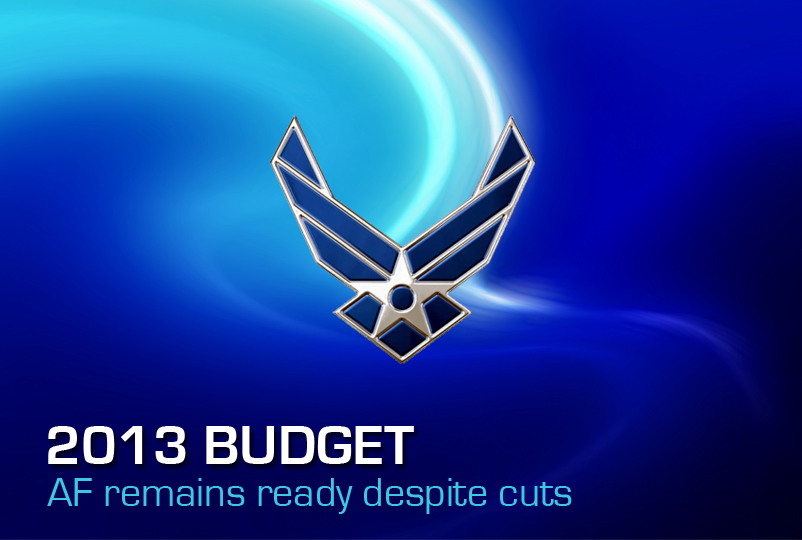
2013 Budget